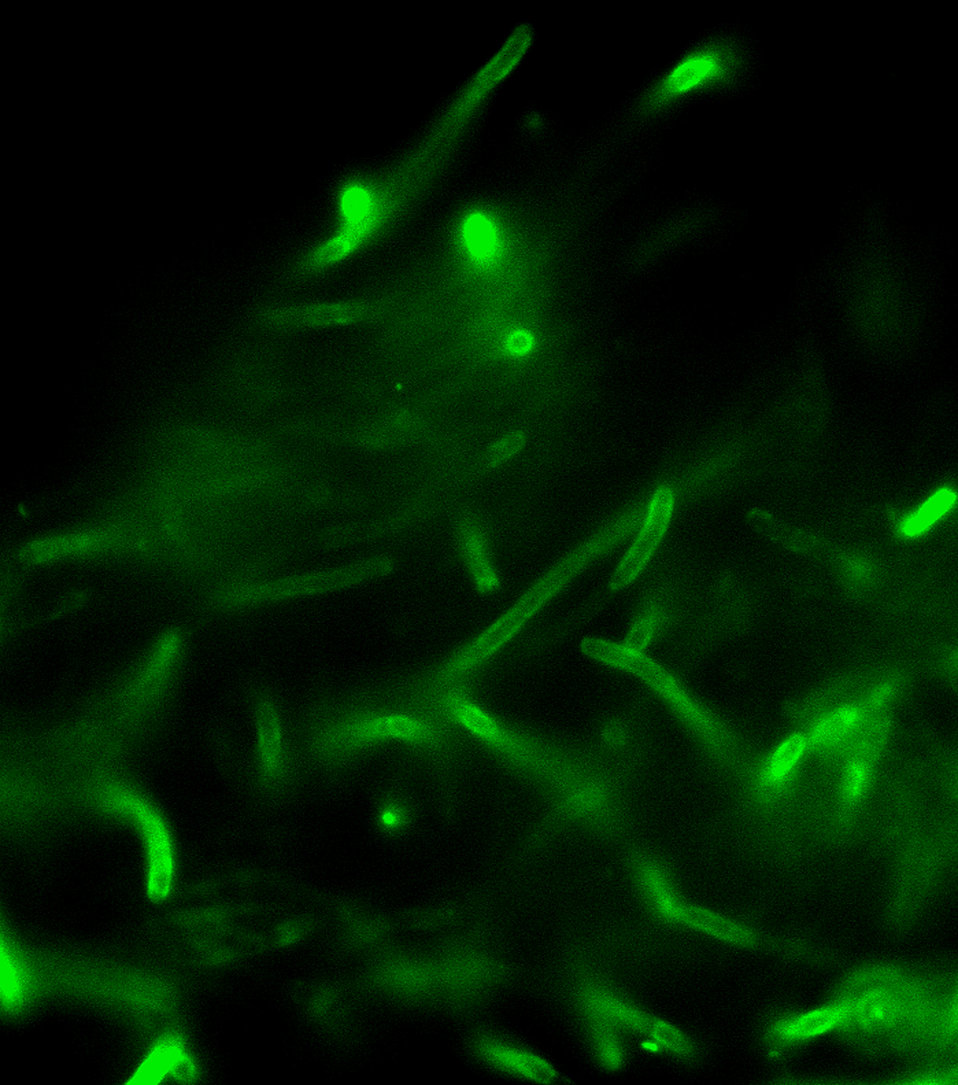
B. anthracis Direct Fluorescent Antibody (DFA) cell wall stain.